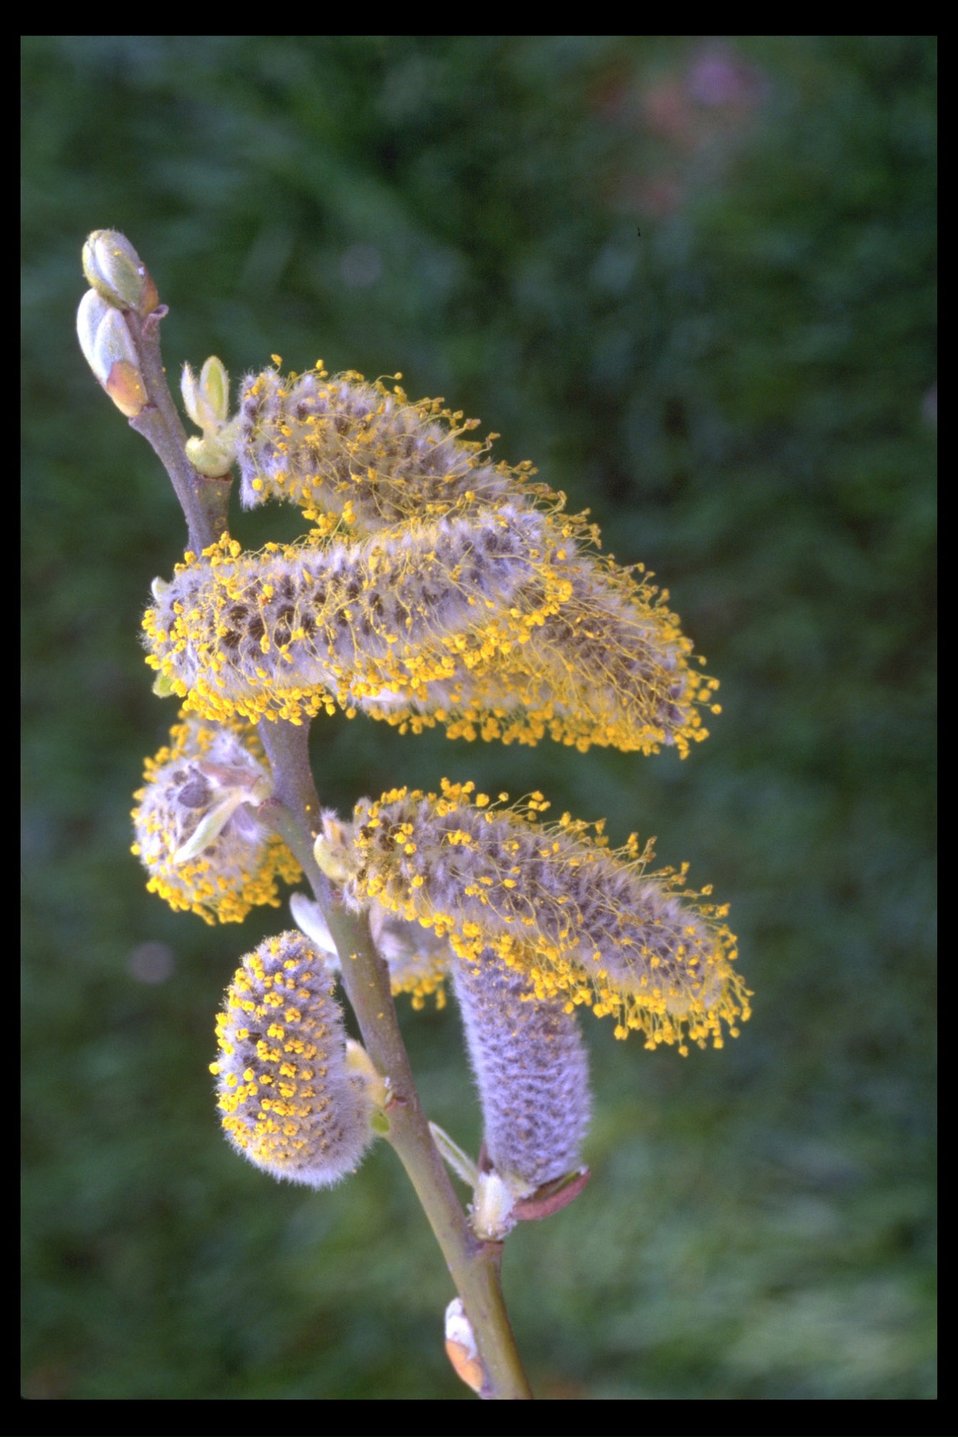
Pussy Willows, or Willow Catkins, (Salix sp.) near Upper Pleasant Creek. Note: this image was scanned upside-down.